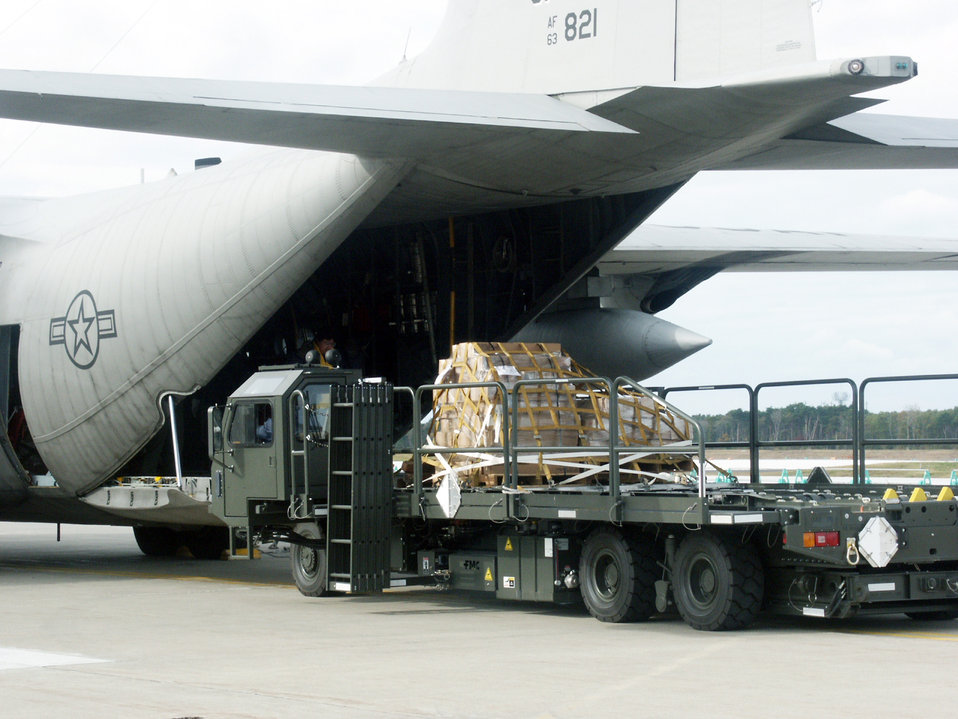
Earthquake relief sent to Niigata

MISAWA AIR BASE, Japan -- Pallets containing earthquake relief supplies are loaded onto a C-130 Hercules here Oct. 28. Officials from the 35th Fighter Wing here and the 374th Airlift Wing at Yokota Air Base, Japan, provided 6,000 pounds of plastic sheeting as part of a humanitarian relief mission for victims of the recent earthquake at Niigata, Japan. The plastic sheeting will be used to construct shelters.